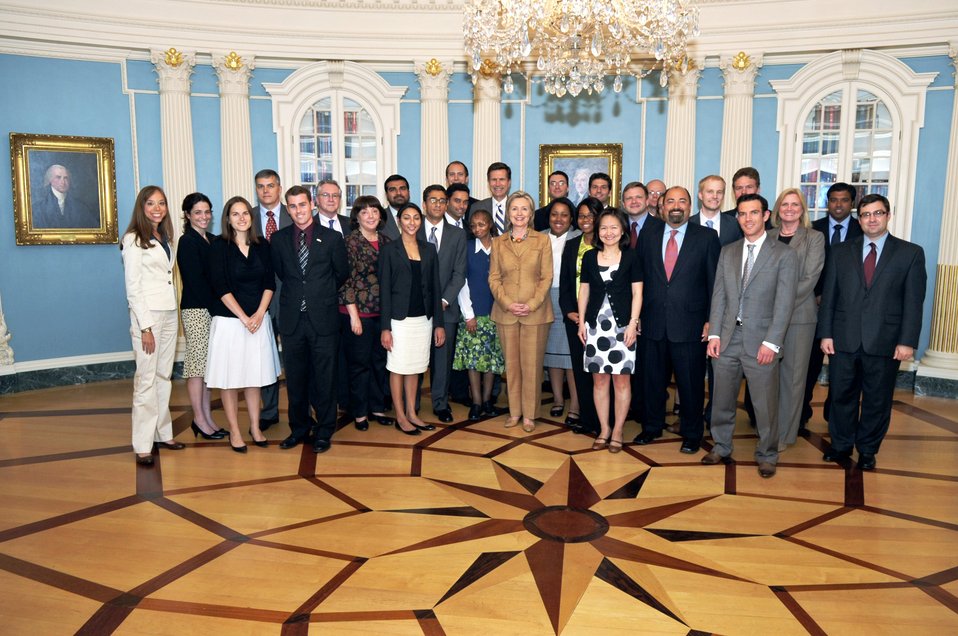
Secretary Clinton With Bureau of South and Central Asian Affairs Staff

U.S. Secretary of State Hillary Rodham Clinton poses for a photo with staff from the Bureau of South and Central Asian Affairs involved in the U.S.-India Strategic Dialogue at the U.S. Department of State in Washington, D.C., on June 11, 2010.